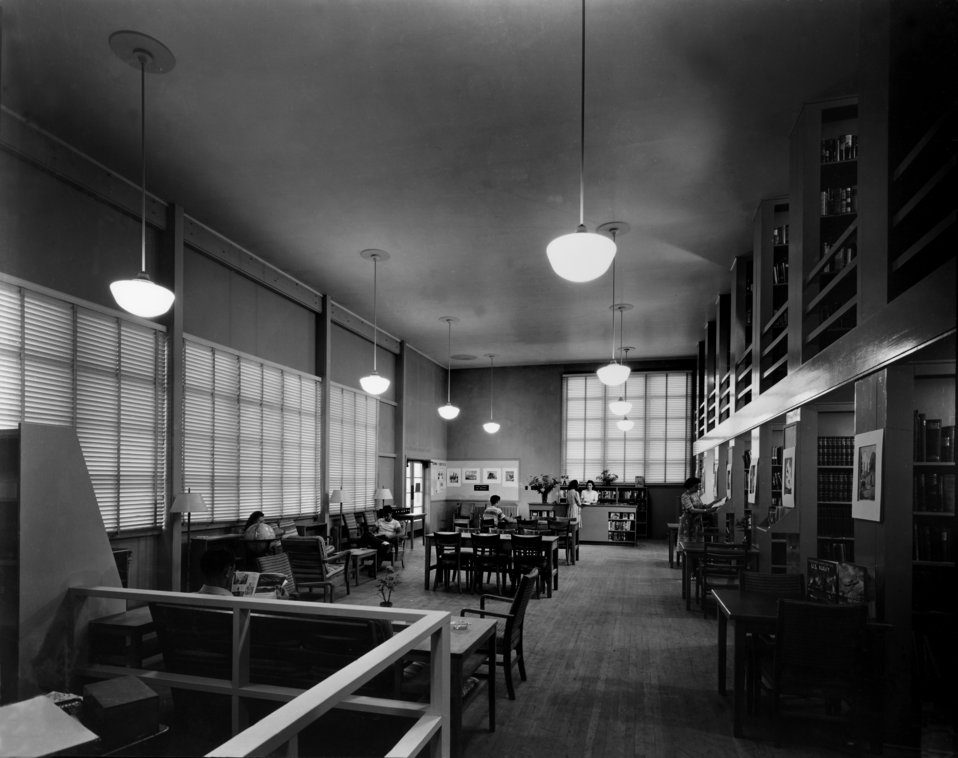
Public Library Interior Oak Ridge

MED 312 DOE photo by Ed Westcott 1945 Oak Ridge Tennessee